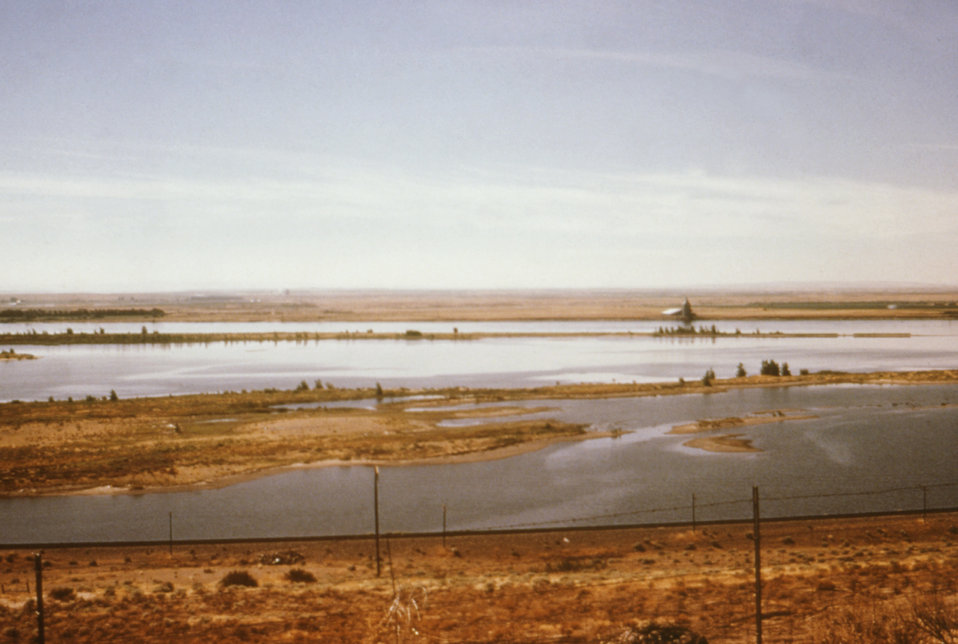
This 1976 photograph was taken while overlooking the Umatilla Wildlife Refuge in Oregon.